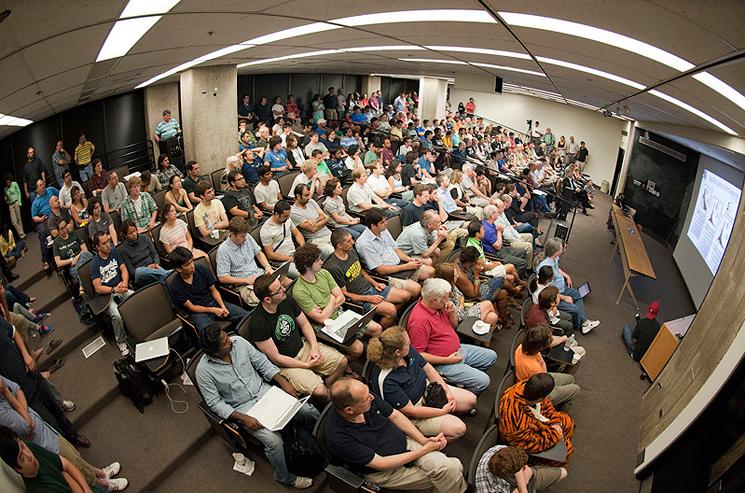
Photo of the Week: July 6, 2012

More than 200 Fermilab researchers and staffers crowded into an auditorium at 2 a.m. EDT July 4 and waited for the latest announcement regarding the Higgs boson. When CERN Director-General Rolf-Dieter Heuer said the words - 'I think we have it' – the Fermilab crowd erupted into applause. Fermi National Accelerator Laboratory and Brookhaven National Laboratory are the host laboratories for the U.S. contingents of the Large Hadron Collider (LHC) experiments that found the Higgs boson-like particle. They and researchers from Argonne National Laboratory, Lawrence Berkeley National Laboratory and SLAC National Accelerator Laboratory are among the 1,700 scientists, engineers, technicians and graduate students from the United States that helped design, build and operate the LHC accelerator and particle detectors, and analyze the data from the collisions.